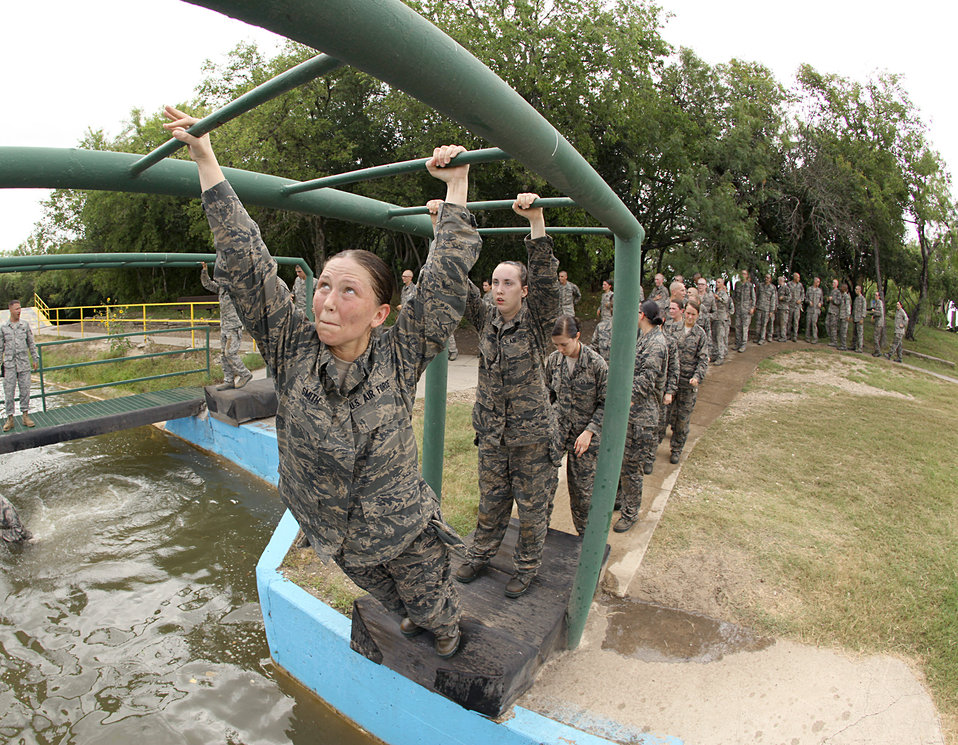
I'm making it across - dry

Air Force Basic Military Training trainees begin the monkey bars obstacle June 30, 2010, at the confidence course at Lackland Air Force Base, Texas. In BMT, trainees learn the critical importance of discipline, teamwork and foundational knowledge needed to succeed as an Airman.